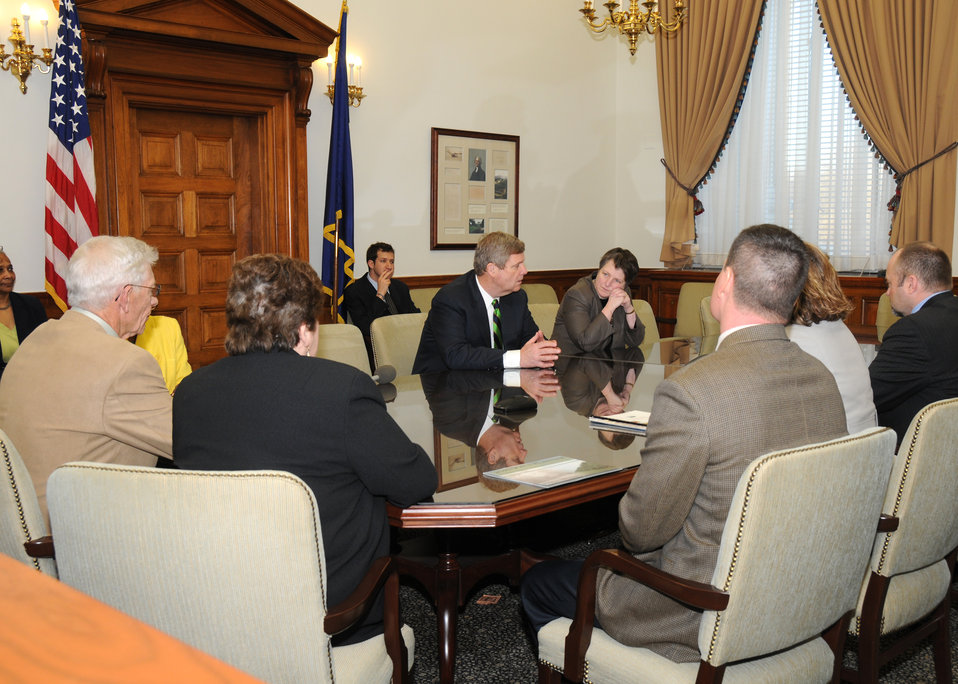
Agriculture Secretary Tom Vilsack talks to the recipients of the Outstanding Young Farmer Award at the Department of Agriculture on Wednesday, March 17, 2010. The Outstanding Young Farmer program has been administered by The U.S. Junior Chamber (Jaycees) since the 1950s. The Outstanding Young Farmer program was established to enhance interest in the farmer, foster better urban-rural relations by understanding of farmers' problems, develop an appreciation of farmers’ contributions and achievements, and inform the agribusiness community of the growing urban awareness of farmers' importance and impact on the American economy. USDA Photo 10di1270-10